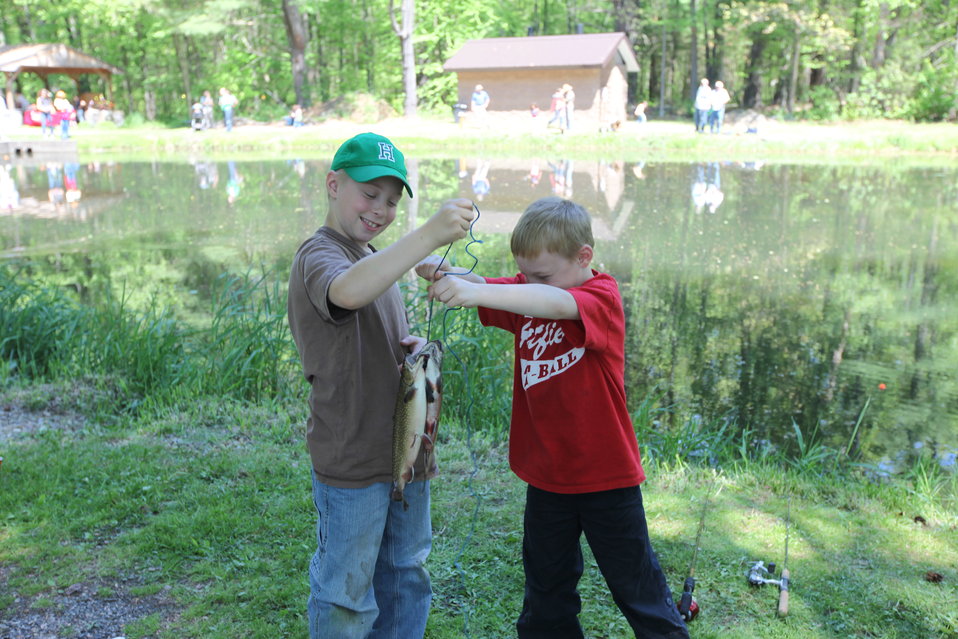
Youth Fishing Derby 2012

Megan Nagel/USFWS